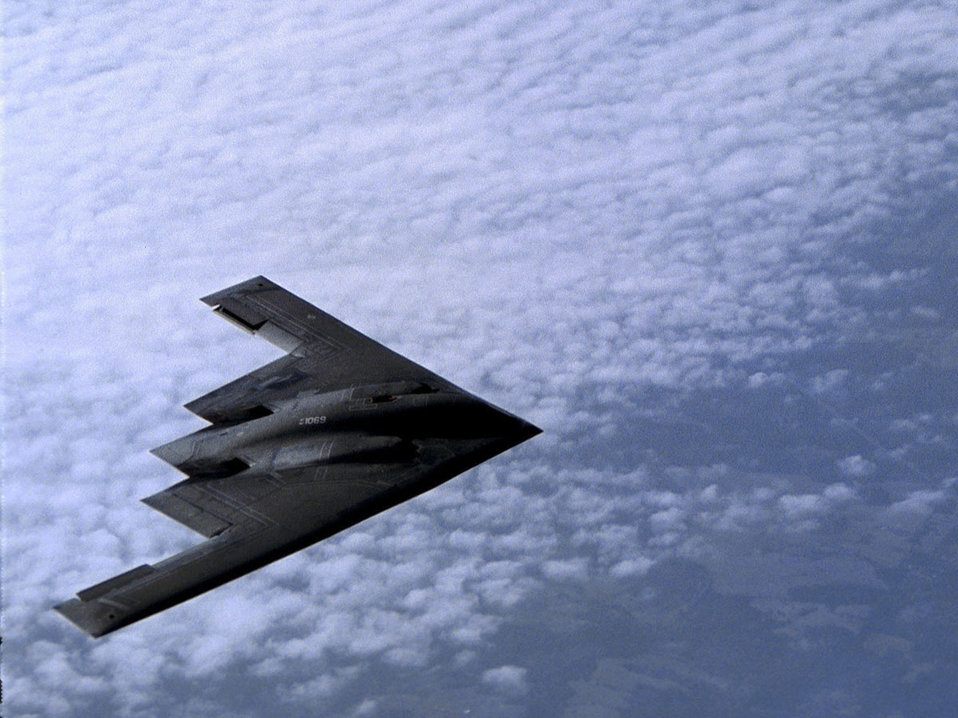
Open flight

A B-2 Spirit bomber flies across an open stretch of sky. The B-2 Spirit is a multi-role bomber capable of delivering both conventional and nuclear munitions.